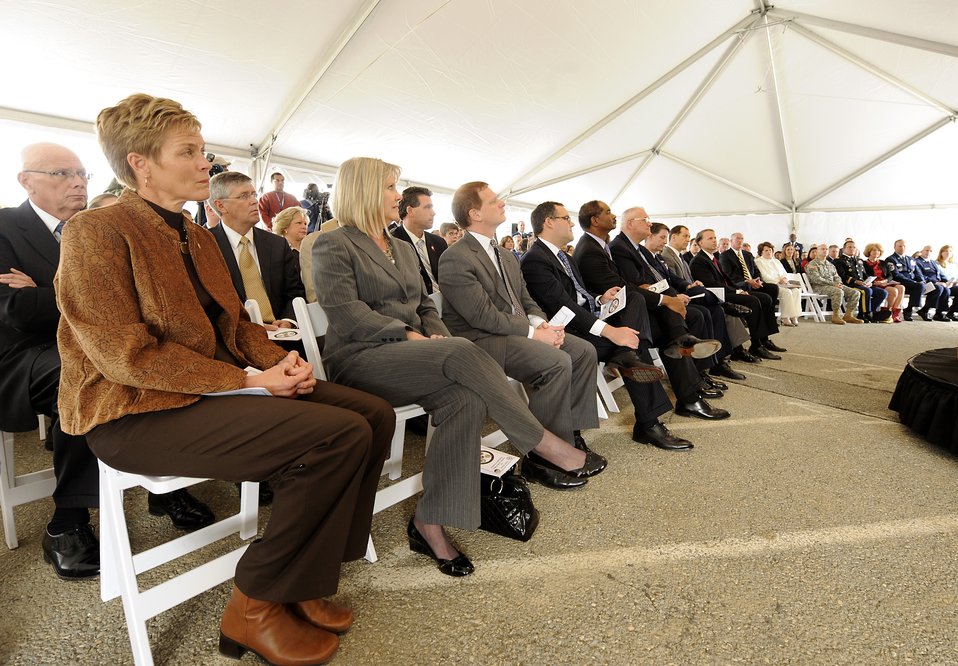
Dover AFB Fisher House Dedication

Gail Donley, wife of Secretary of the Air Force Michael Donley, and Suzie Schwartz, wife of Air Force Chief of Staff Gen. Norton Schwartz, listen to speeches during the Fisher House for Families of the Fallen dedication ceremony on Nov. 10, 2010, at Dover Air Force Base, Del. The Fisher House Foundation built the 50th Fisher House at Dover to support families visiting the base for dignified transfers of their loved ones.